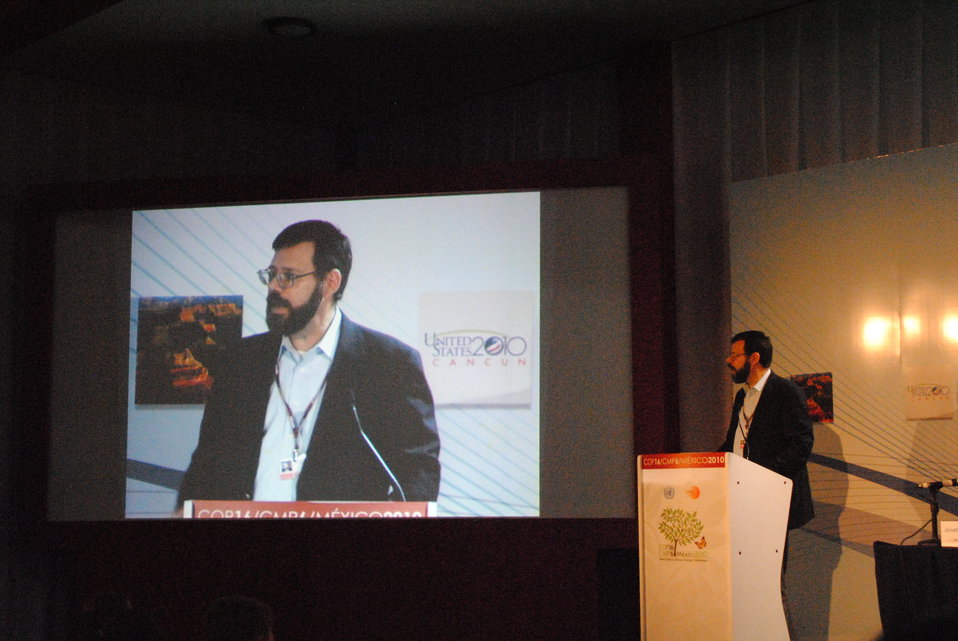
Deputy Special Envoy Pershing Addresses the Audience

U.S. Deputy Special Envoy for Climate Change Jonathan Pershing addresses members of the audience during the side event, Enhancing Capacity for Low Emission Development Strategies, at the U.S. Center at COP-16 in Cancun, Mexico, on December 2, 2010.